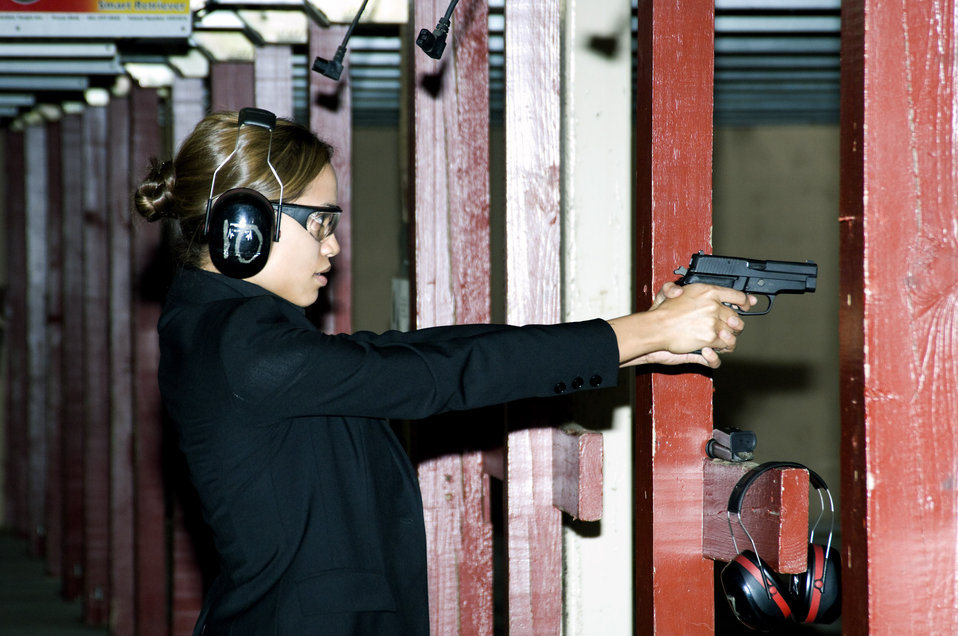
Air Force provides support in new Hollywood movie

Rosario Dawson fires a M11 pistol at the firing range at Andrews Air Force Base, Md. Ms. Dawson was at the base researching her role as a special agent with the Air Force Office of Special Investigations in the movie